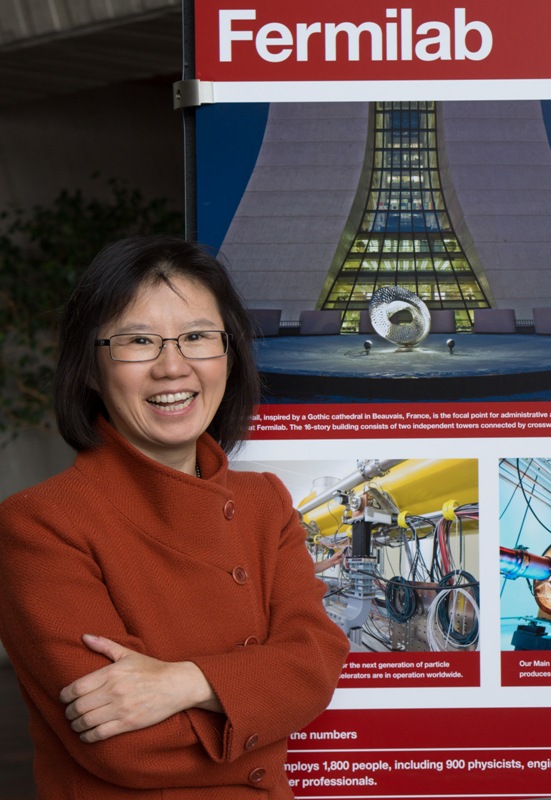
Young-Kee Kim is the Deputy Director of Fermi National Accelerator Laboratory and a Louis Block Professor of Physics at the University of Chicago. As an experimental particle physicist, Young-Kee’s research focuses on understanding the origin of mass for fundamental particles. Since July 2006, she has served as Deputy Director of Fermi National Accelerator Laboratory. In this role, she leads and manages development and implementation of the particle physics strategic plan at Fermilab. She previously served as co-spokesperson for the CDF experiment at Fermilab’s Tevatron, a premier particle physics experiment with more than 600 physicists from around the world. Young-Kee earned a Ph.D. in Physics from the University of Rochester, and a B.S. and M.S. in Physics from Korea University. Her postdoctoral research was completed at Lawrence Berkeley National Laboratory. In 2005, Young-Kee received the Ho-Am Prize, Korea’s award given to “those who have made outstanding contributions to the development of science and culture, and enhancement of the welfare of mankind”, and the Guk-Min Po-Sang from the South Korean government in 2008 for her contributions to science and community.

Read her full story at energy.gov/diversity/articles/women-energy-young-kee-kim